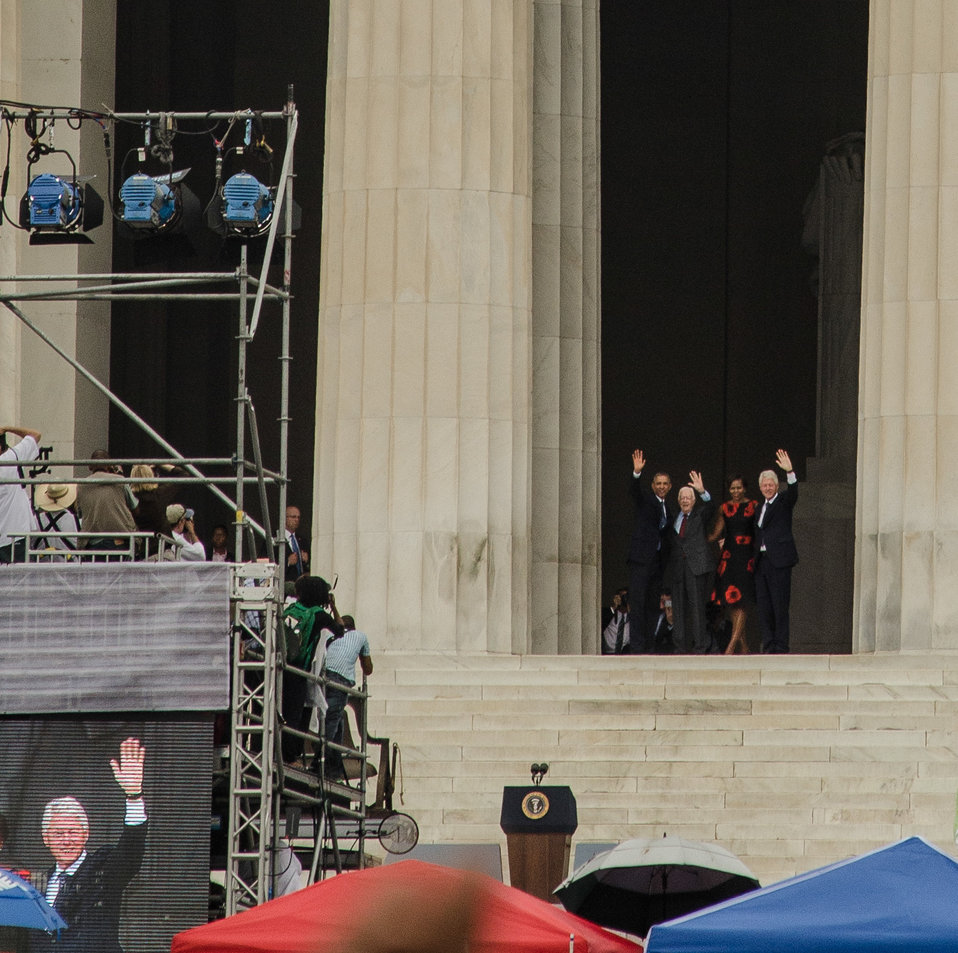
At the end of the event (left-right) Presidents Barack Obama, former President Jimmy Carter, First Lady Michelle Obama, and former President Bill Clinton wave to the marchers gathered at the Lincoln Memorial for the The March on Washington on Wednesday, August 28, 2013, in Washington, D.C. This is a 50th Anniversary celebration of Dr. Martin Luther King, Jr.'s original March on Washington, when he gave his 'I Have a Dream' speech to more than 200,000 people at this same place.